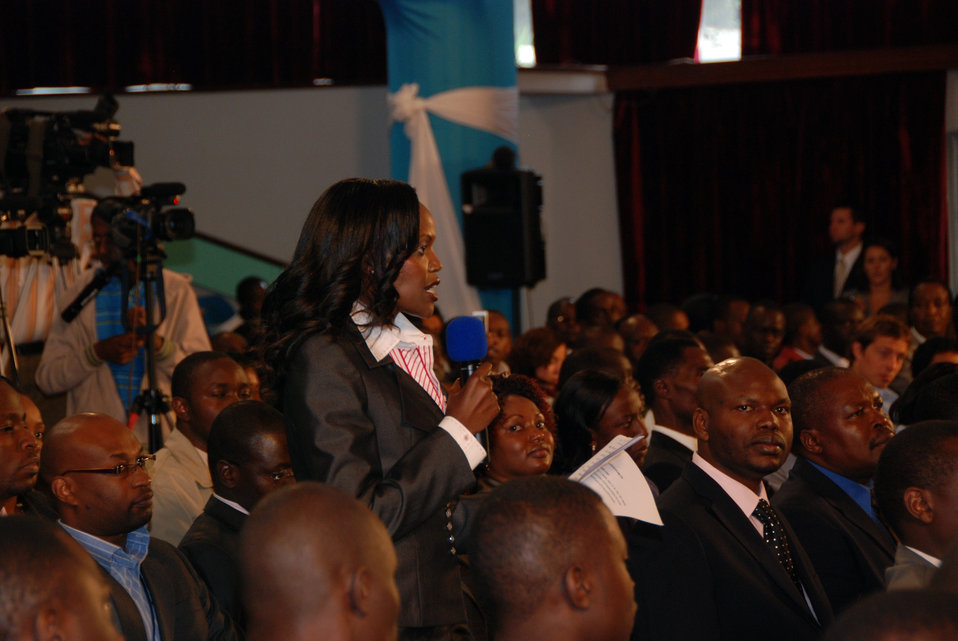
Secretary Clinton Participates in Town Hall Meeting

An audience member asks a question during a town hall meeting featuring U.S. Secretary of State Hillary Rodham Clinton at the University of Nairobi in Nairobi, Kenya August 6, 2009.